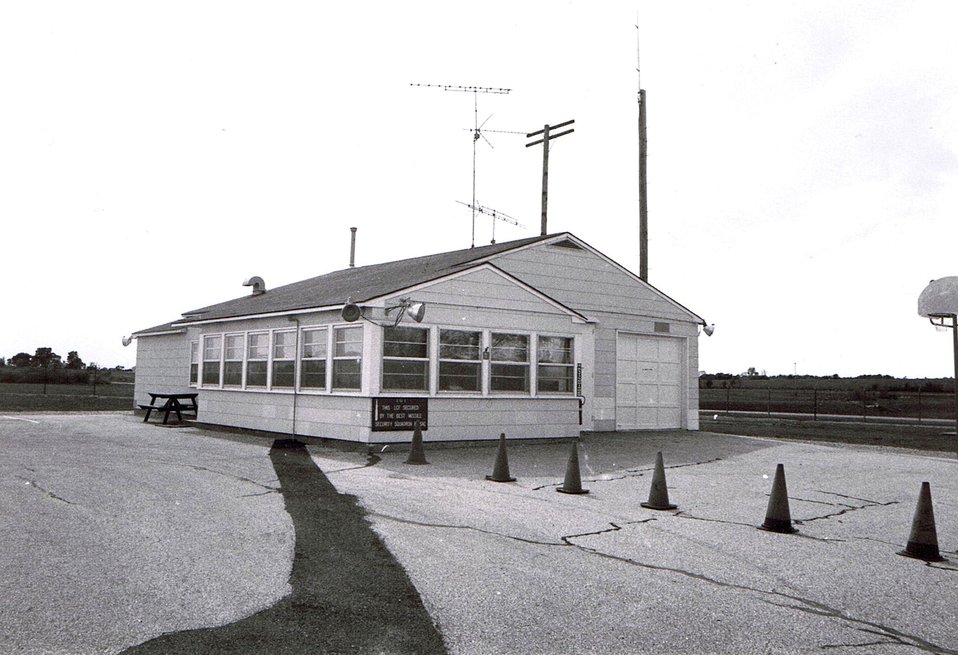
Launch control facility sites like this one were designed to function even after the initial exchanges of a nuclear war. Self-contained, the underground portion housed batteries, a power generator, telephone switches for the underground cable system, and air regeneration equipment. Redundancies in the system meant that even a damaged LCF would have the minimal capability to perform its mission. The facility was manned by 10 people with two assigned as crew downstairs.